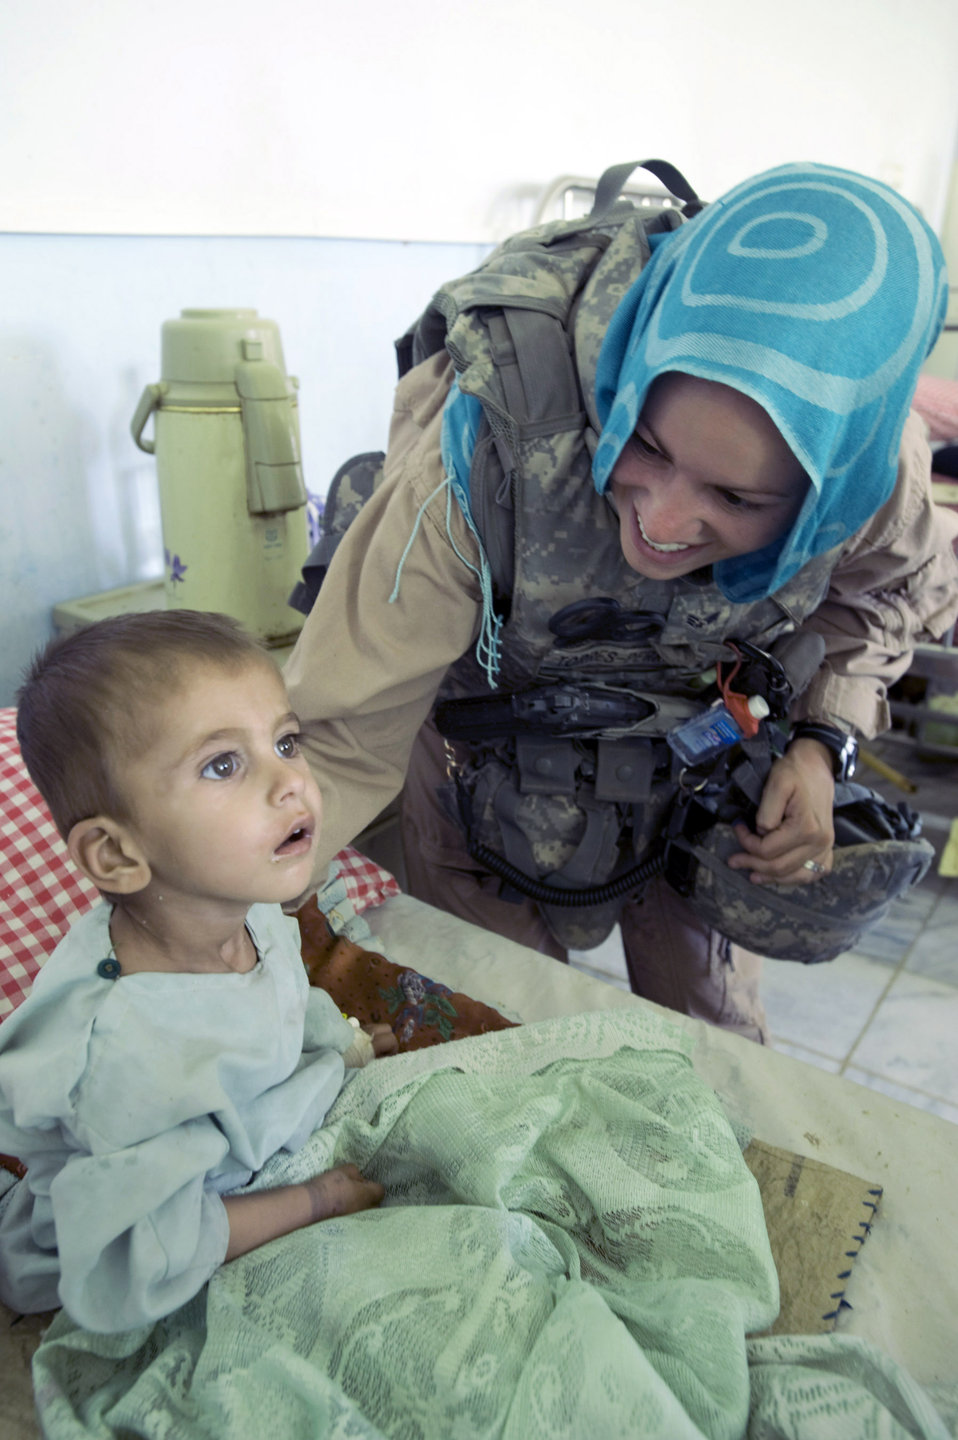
Feeling better?

Senior Airman Felicita Torres-Perkins, a member of the Zabul Provincial Reconstruction Team, comforts a young Afghan girl Aug. 10 at the Qalat Hospital in Qalat, Afghanistan. She wears the scarf to honor the customs of this conservative region of the country.